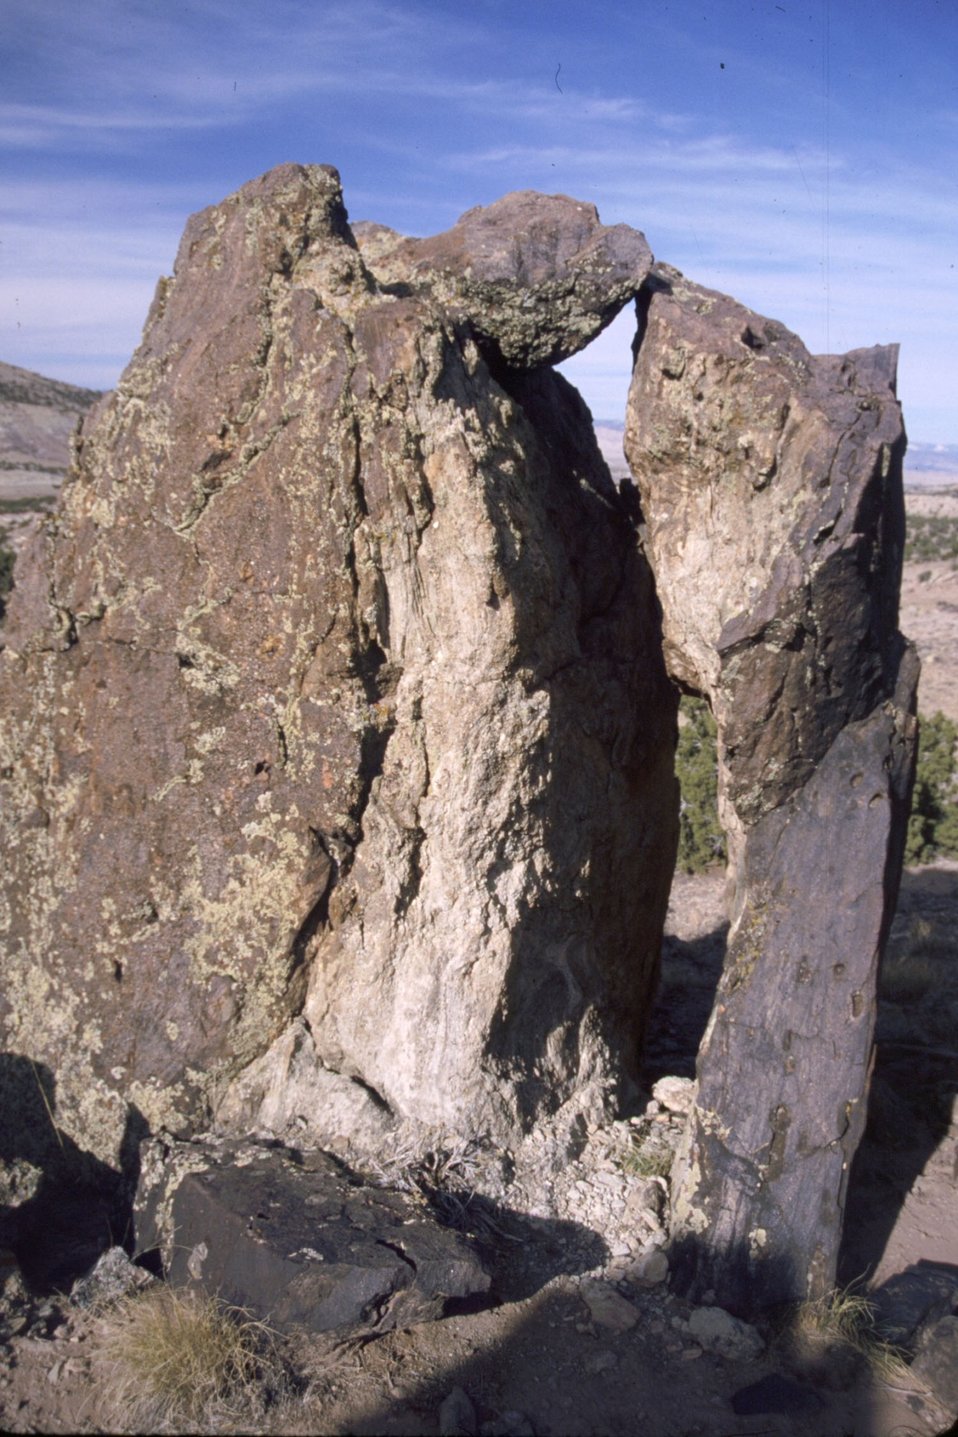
Unusual Geology Slit Rock